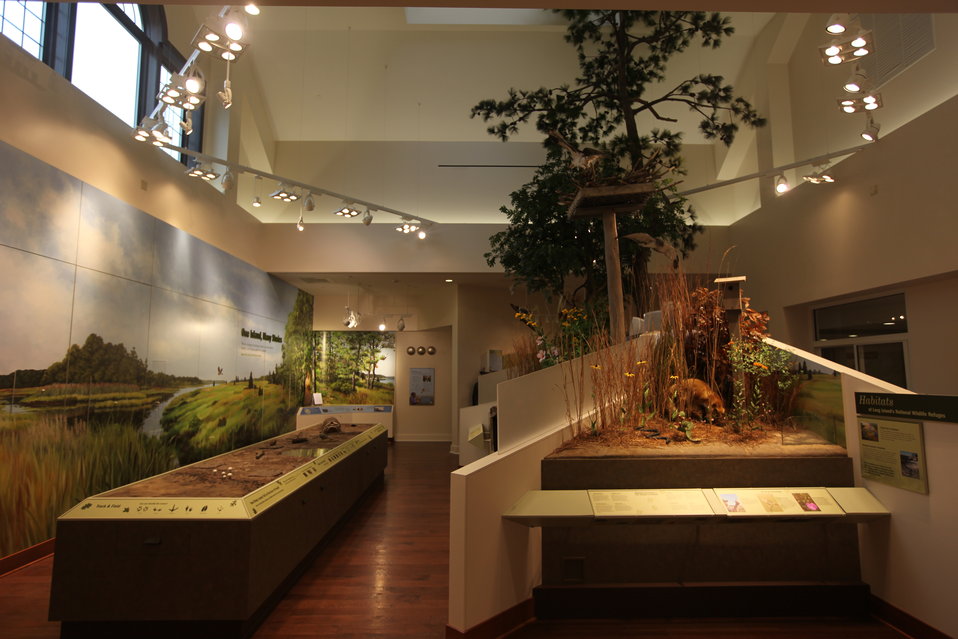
Exhibits

First looks at the finished exhibits at the Visitor Center....